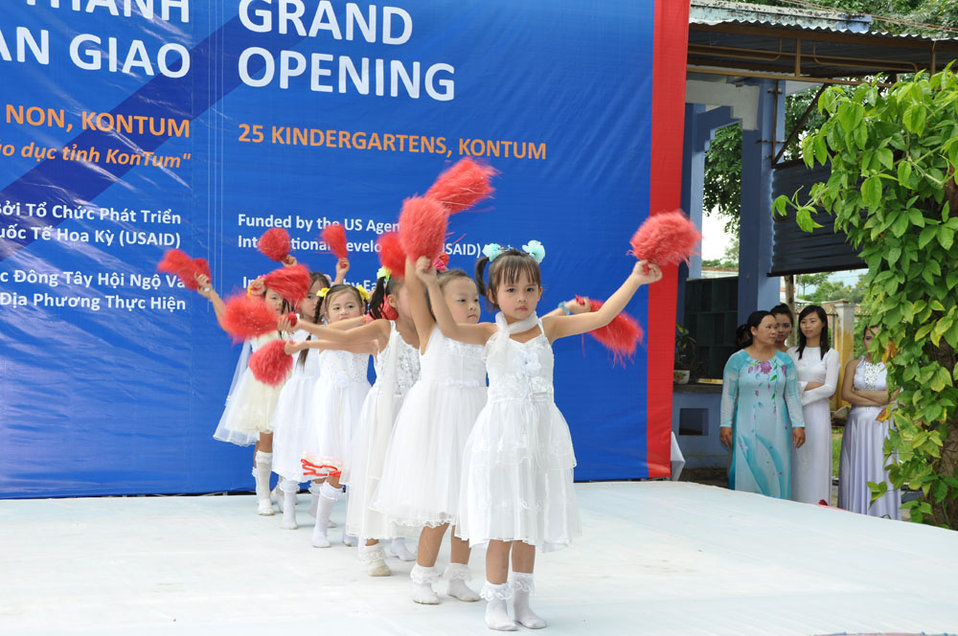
Children celebrate 25 refurbished and expanded kindergartens.